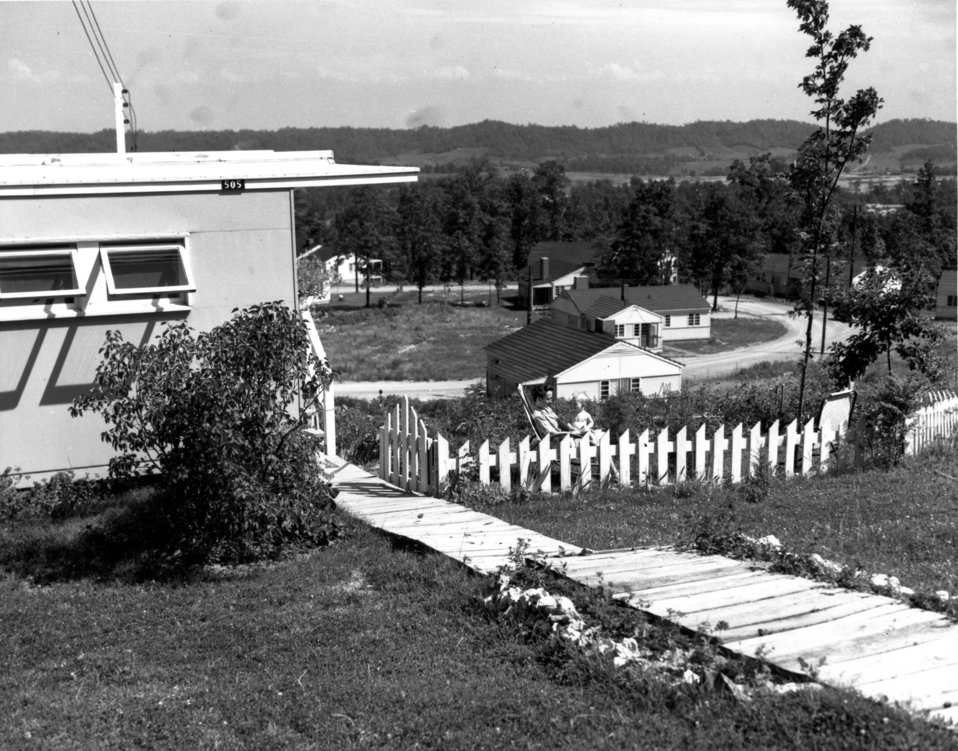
Housing at Oak Ridge